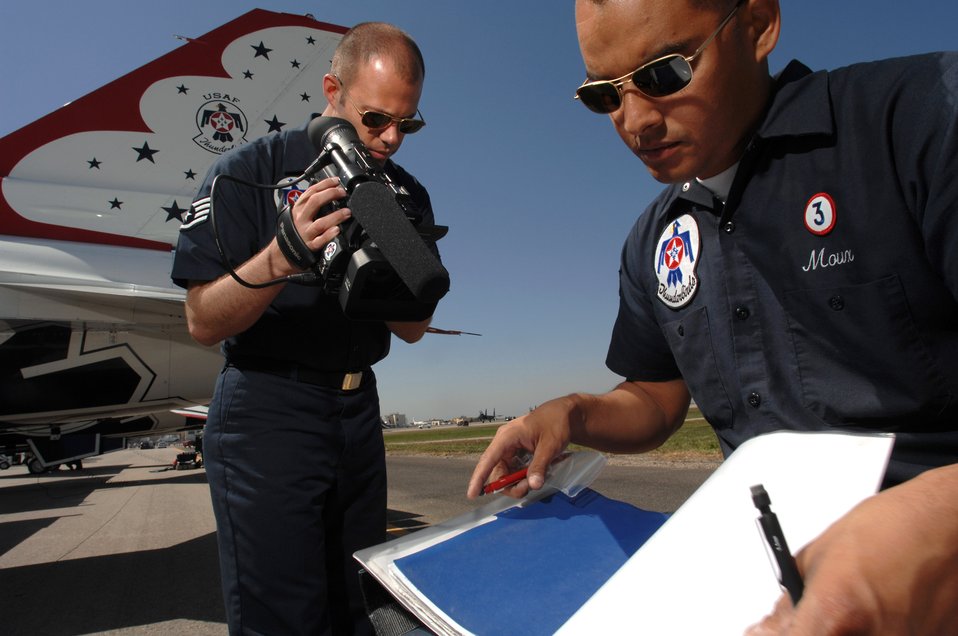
T-Birds getting ready for the airshow

Staff Sgt. Josh Gray, a broadcaster with the Air Force Thunderbirds, videotapes crew chief Staff Sgt. Noel Moux March 30 prior to a Thunderbird practice show at Naval Base Ventura County, Point Mugu, Calif.